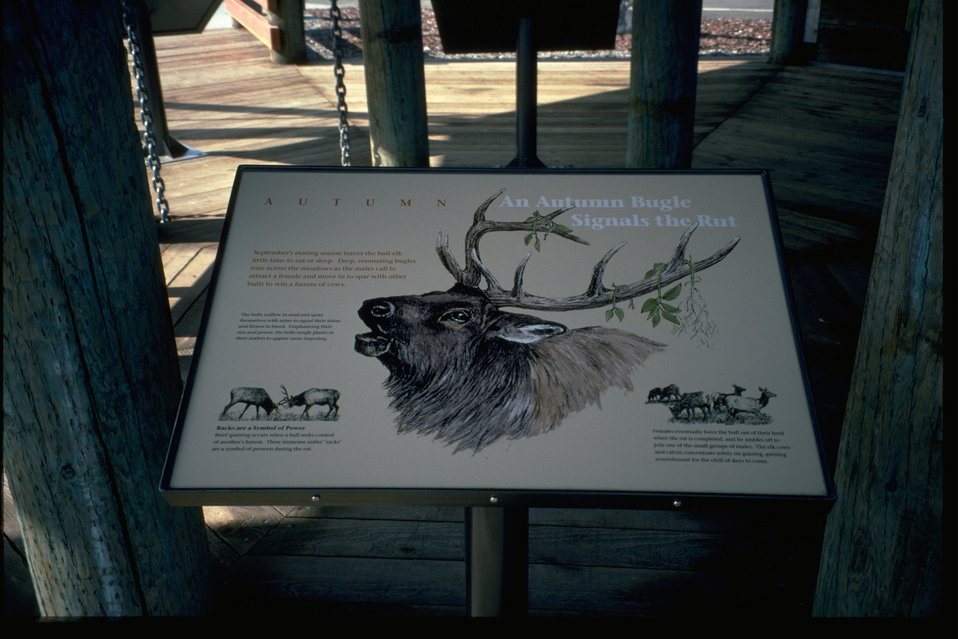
Mop up of a prescribed fire.